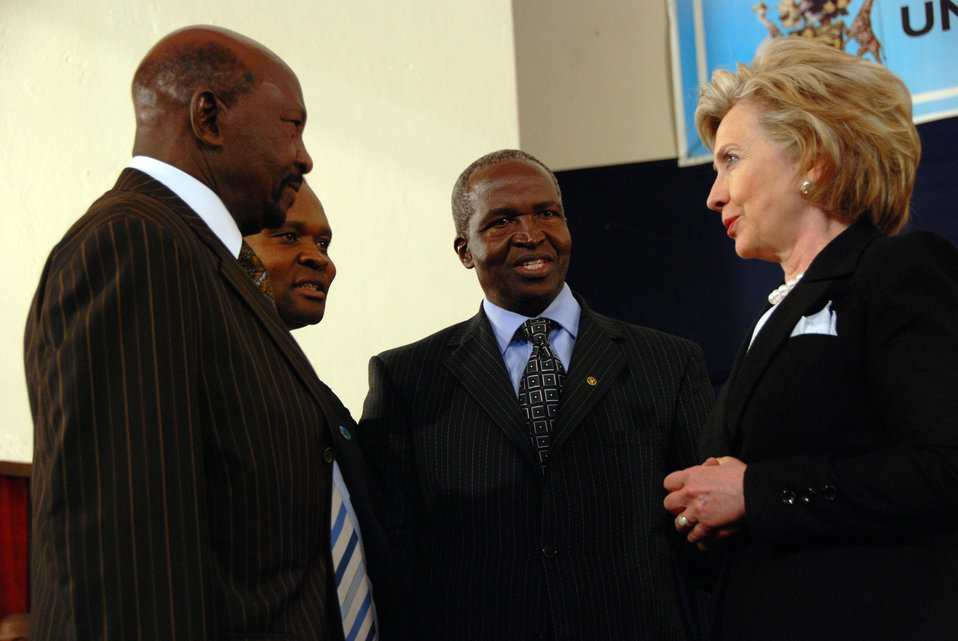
Secretary Clinton Visits Nairobi University

U.S. Secretary of State Hillary Rodham Clinton speaks with a group of men at the University of Nairobi, Kenya in Nairobi, Kenya August 6, 2009.